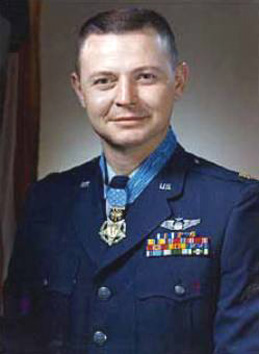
Col. Merlyn H. Dethlefsen, Medal of Honor recipient for actions in the Vietnam War.